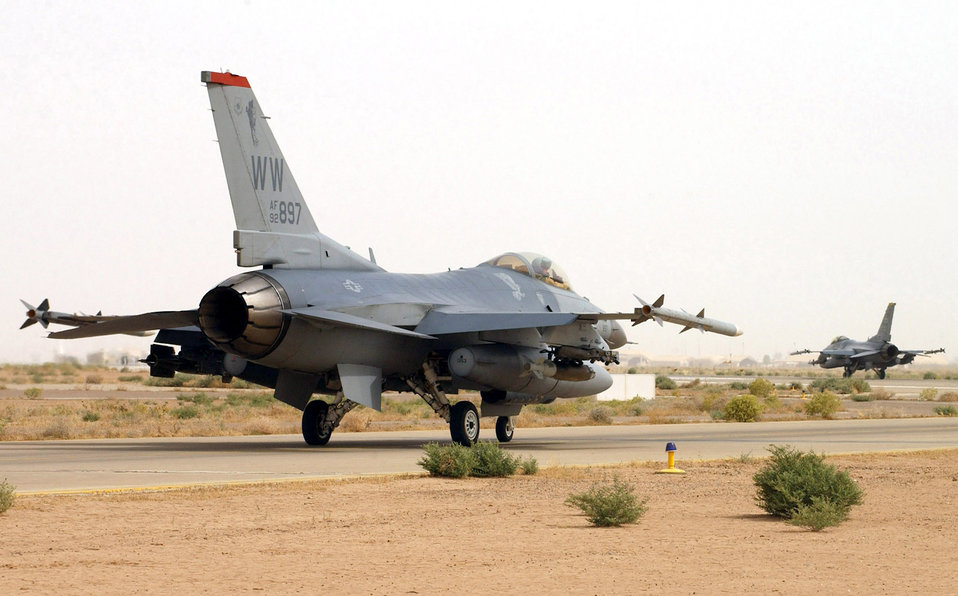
Airpower summary for Aug. 9, 2007

An F-16CJ from the 13th Expeditionary Fighter Squadron at Balad Air Base, Iraq, follows an F-16CJ from its sister squadron, the 14th Expeditionary Fighter Squadron, toward the runway for a combat mission.